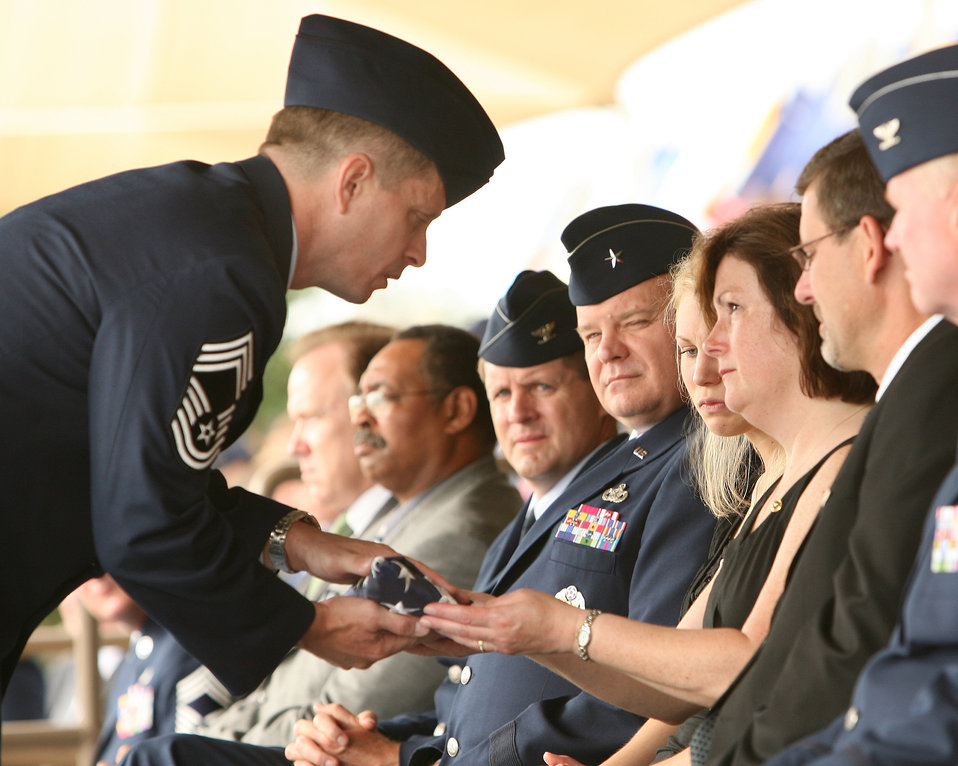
Agent Kuglics

Chief Master Sgt. Michael Tanguay, superintendent of the Air Force Office of Special Investigations 3rd Field Investigations Region, presents a folded American flag to Donna Kuglics, the mother of Special Agent Matthew Kuglics, during a memorial ceremony June 18 at Lackland Air Force Base, Texas. Agent Kuglics was killed in action by an improvised explosive while supporting Operation Iraqi Freedom.